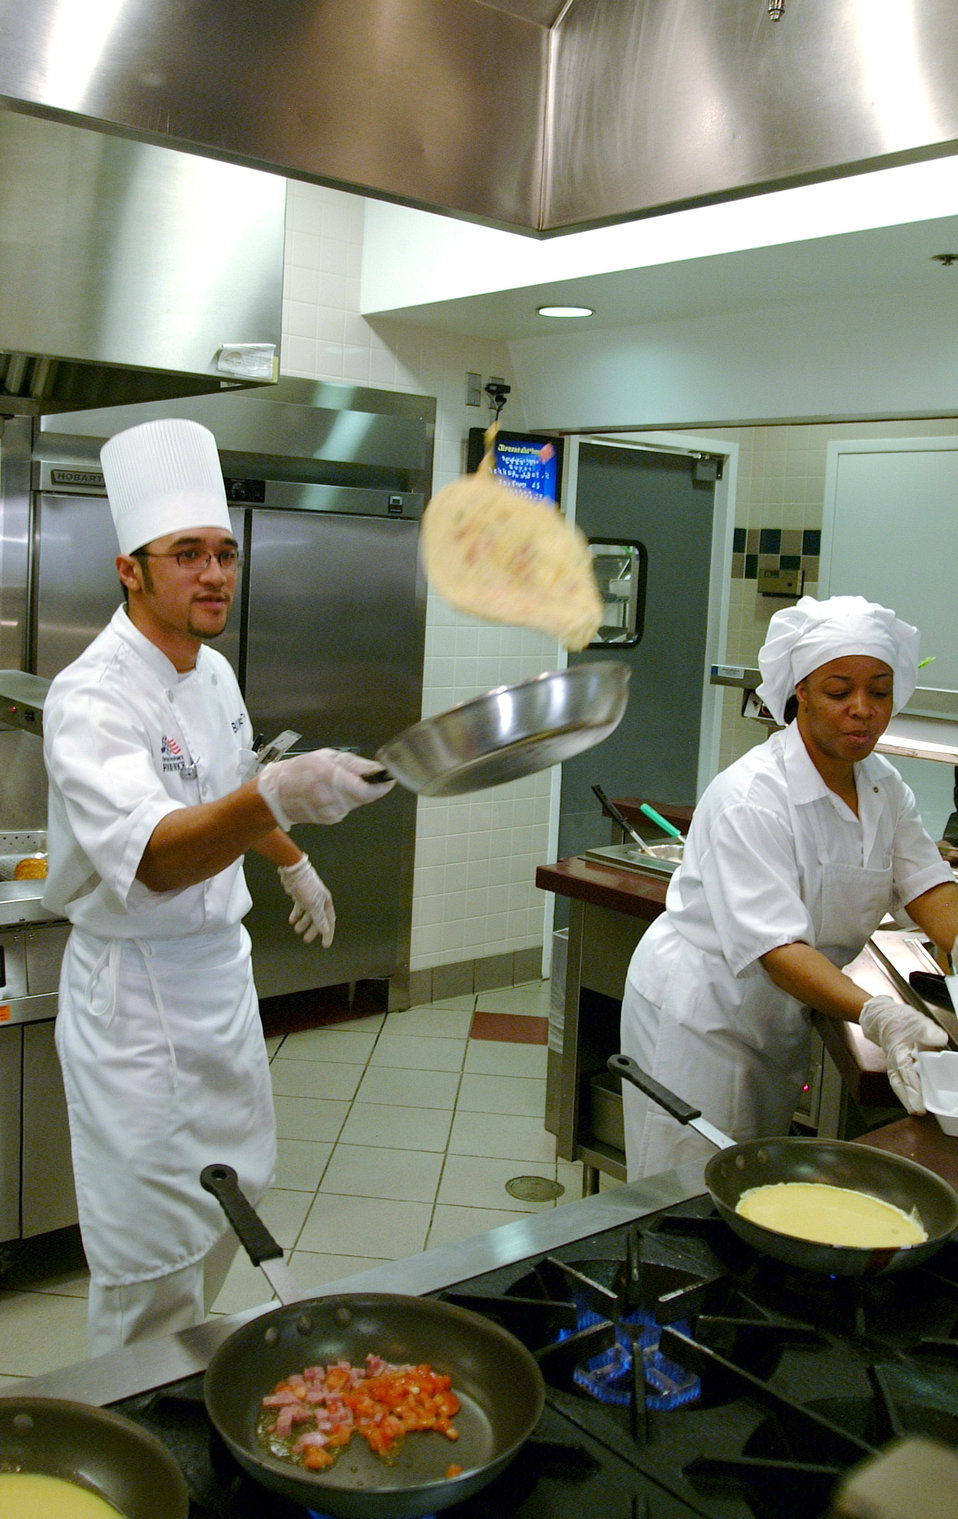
Base chef performs culinary magic

BUCKLEY AIR FORCE BASE, Colo. -- Francis Aragon flips an omelet as part of his entertaining cooking style. He said his cooking style relies on talent, creativity and putting his heart into it. Mr. Aragon is a food service worker at the dining facility here.